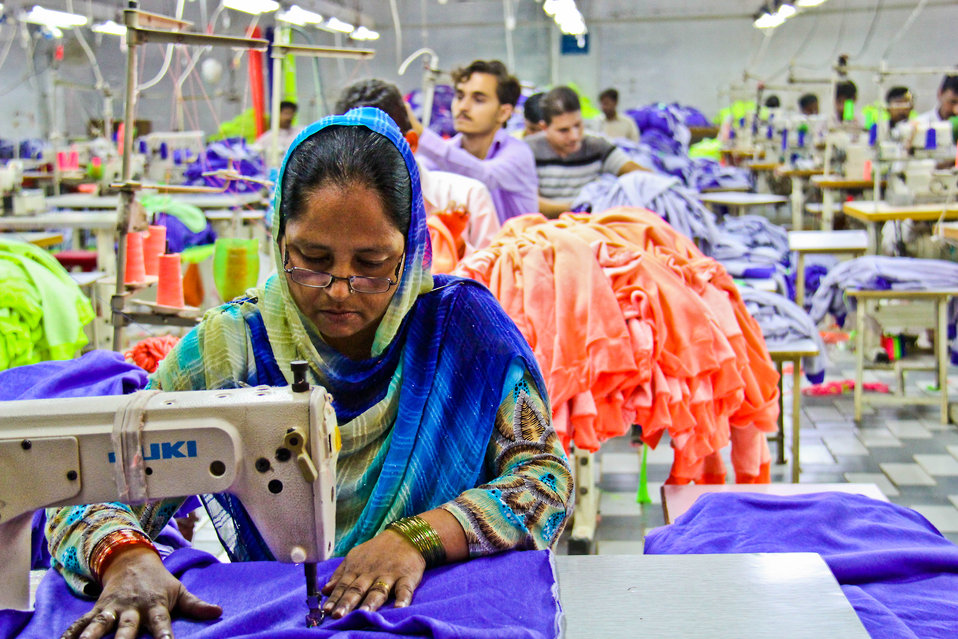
USAID's Firms Project

A woman worker manufactures a garment in a project benificiary factory - women constuitute a significant portion of the workforce in Pakistan's garment industry